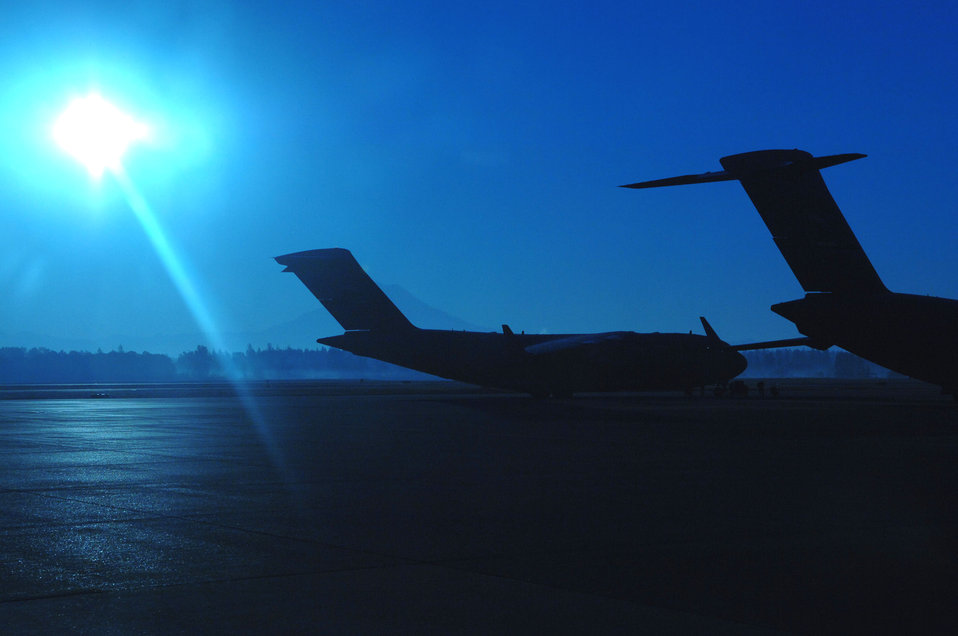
Global reach, global power

A C-17 Globemaster III sits on the fllightline at McChord Air Force Base, Wash. Airmen from McChord AFB provide airlift and aeromedical evacuation in support of the war on terrorism and other contingencies around the world.